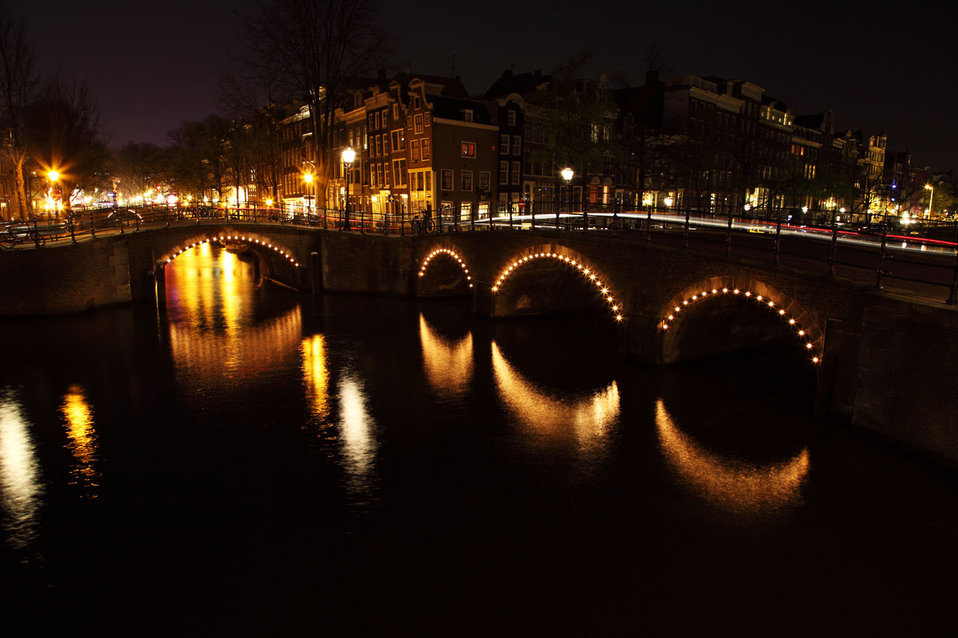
Bridges at night

Illuminated bridges at night in amsterdam.